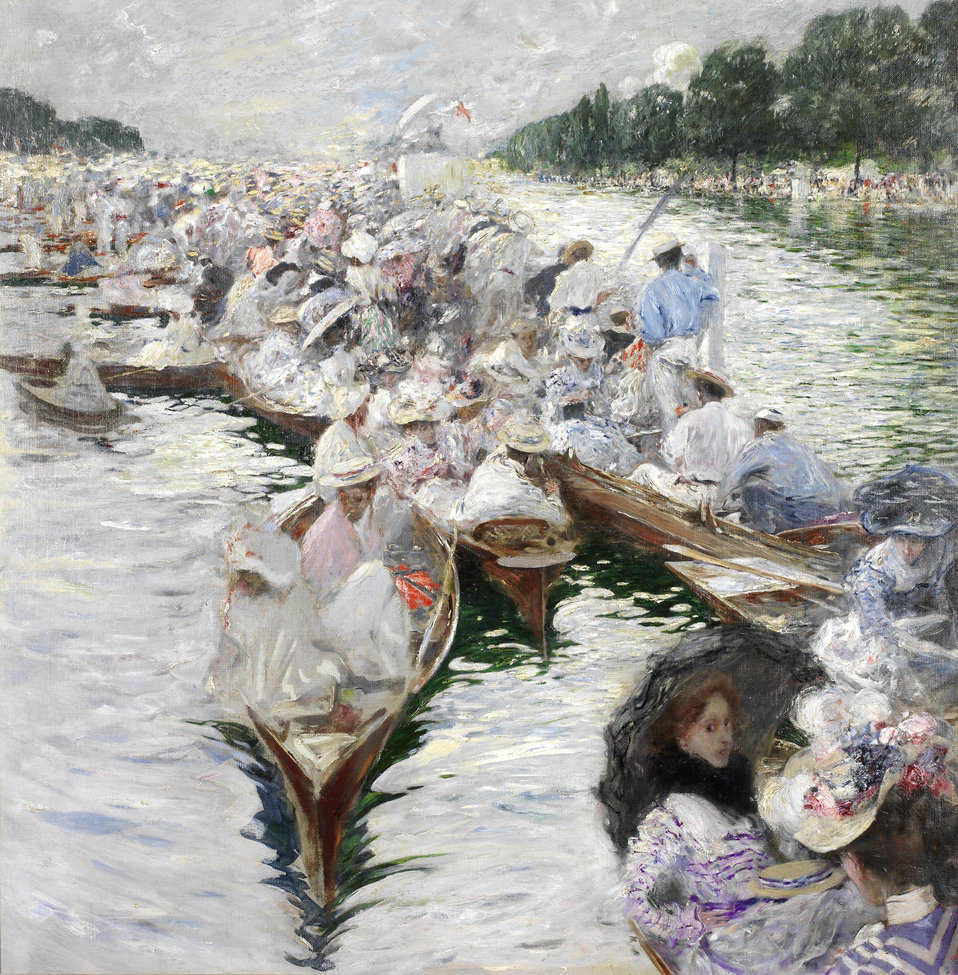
Henley Regatta. Signed, inscribed and dated 'Fried Stahl/Henley 99' (lower centre); oil on canvas; 74 x 72 cm